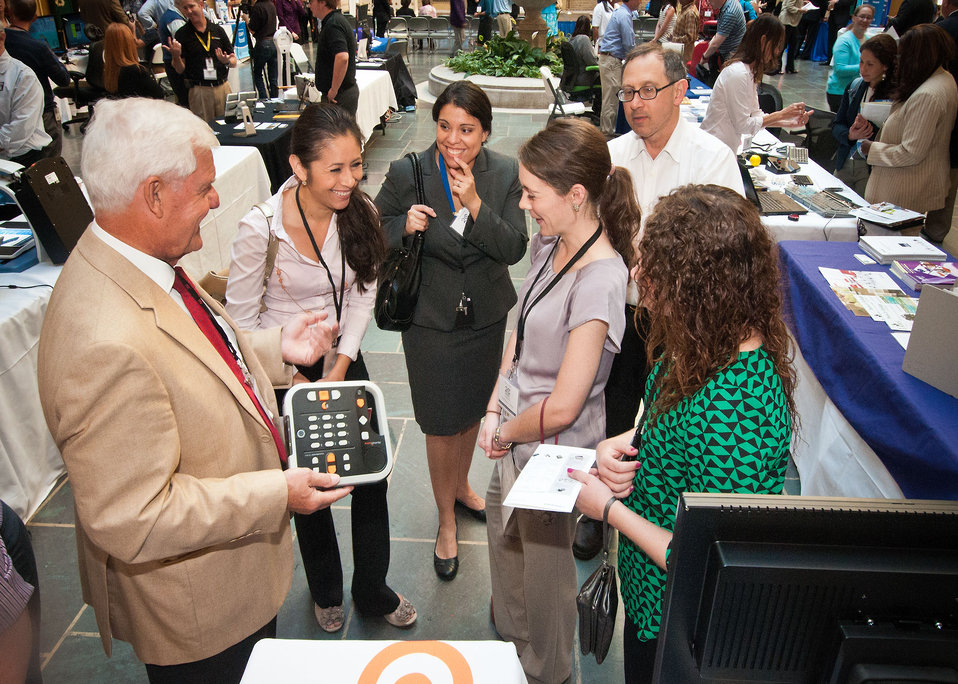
Integration Technologies Group representative Giovanni Canobbio (left) demonstrates a Braille display keyboard to Department of Defense Computer/Electronic Accommodations Program (CAP) employees Karen Argueta, Elizabeth Jones, Kelsey French, and Lynsey Foley, and U.S. Department of Agriculture (USDA) Agricultural Marketing Service (AMS) Disabled Employees Program Manager Todd Birkenruth at USDA’s Departmental Management (DM) Target Center 20th Anniversary at USDA in Washington, D.C. on Thursday, Sept. 13, 2012. The USDA Target Center has provides Assistive Technology to employees with disabilities. The Center has assisted thousands of individuals with disabilities to further contribute to the mission of USDA. The Target Center has also partnered with the Department of Defense Computer/Electronic Accommodations Program (CAP).